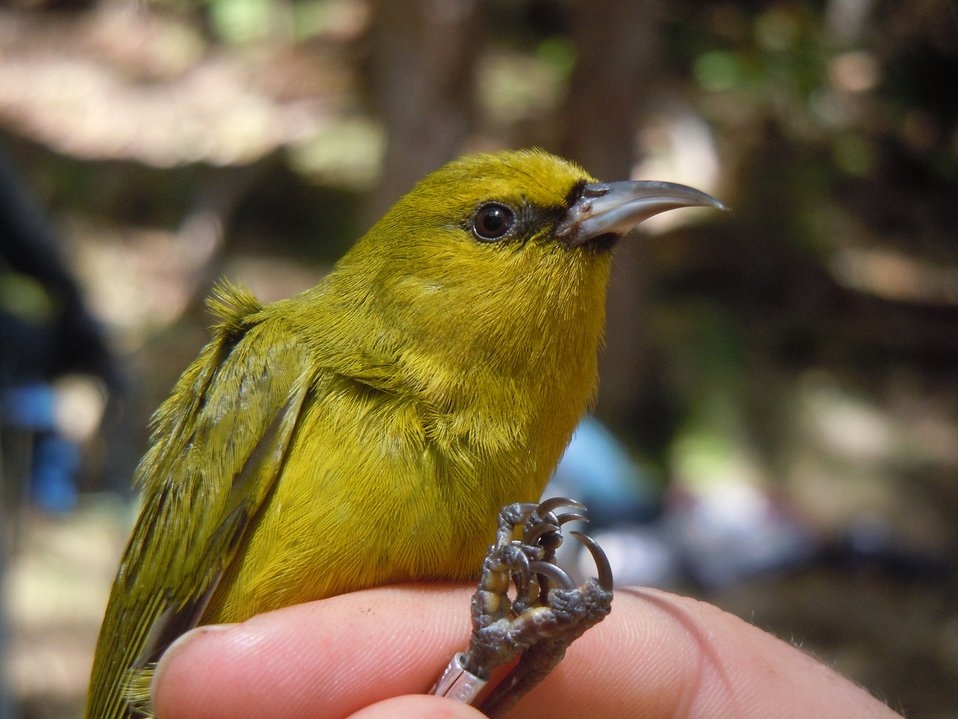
Hawai'i 'amakihi

The endangered 'amakihi evolved in the forests of Hawai'i and is found nowhere else in the world. This bird was banded and released back to the forest.
Hakalau Forest National Wildlife Refuge, HI
March 2012